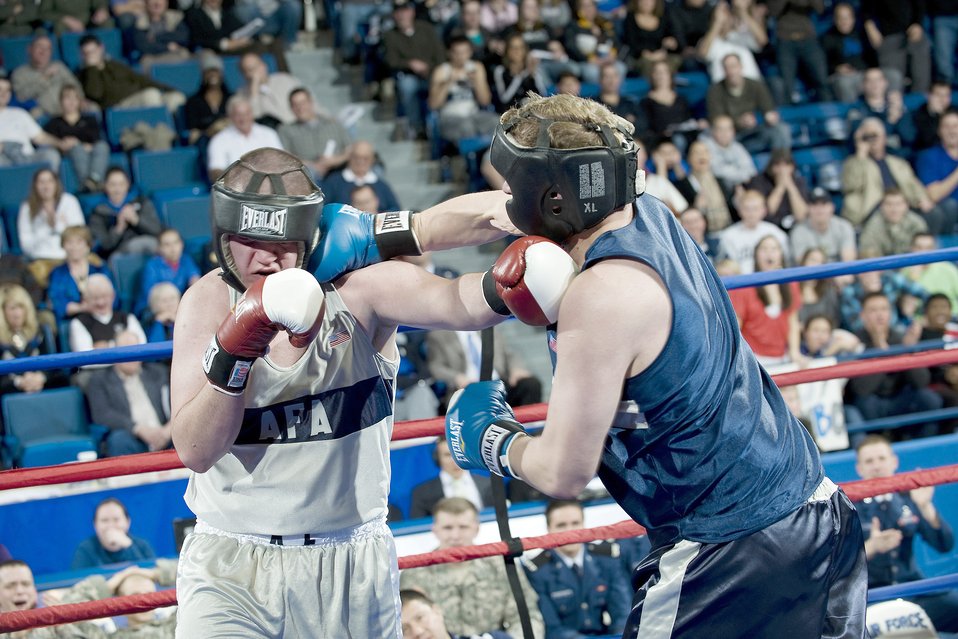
Academy Open Boxing Championship

Junior Mike Chambers lands a right cross to the jaw of senior Richard Meldrum during their Wing Open Championship boxing match held March 5, 2010, at the U.S. Air Force Academy's Clune Arena in Colorado. Chambers went on to win the heavyweight class bout by decision.